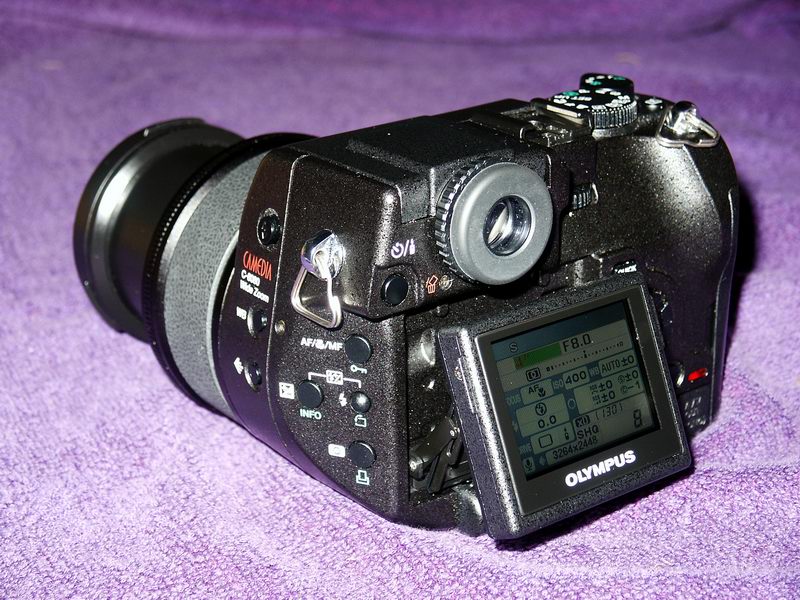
DANYvanvee